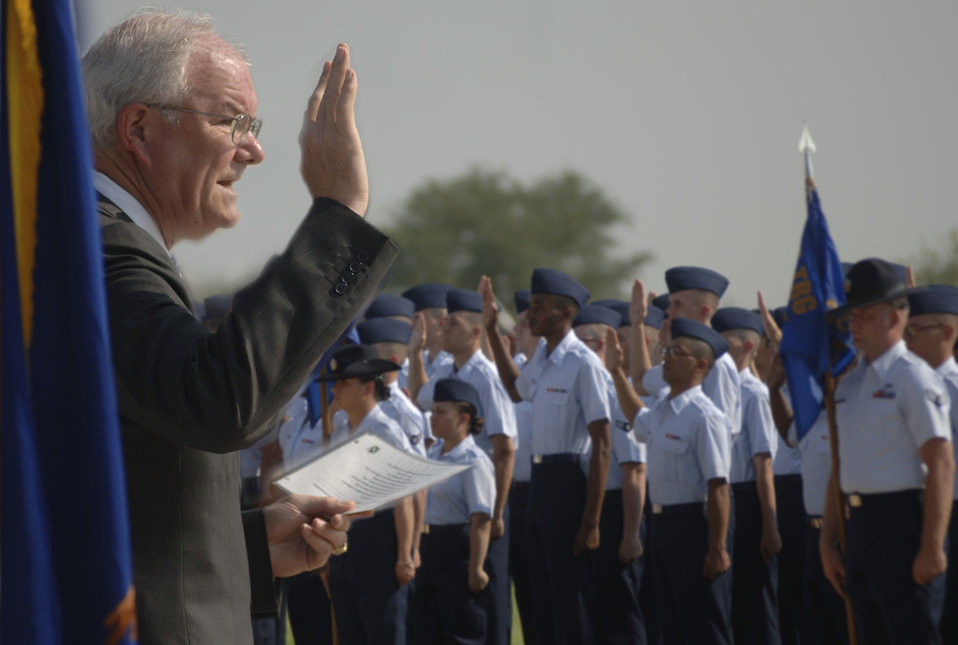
Secretary Wynne expects Airmen to continue to excel

Secretary of the Air Force Michael W. Wynne administers the Oath of Enlistment to basic training graduates on the parade grounds at Lackland Air Force Base, Texas, on Friday, June 2, 2006. Secretary Wynne was in San Antonio visiting various military installations and training sites.